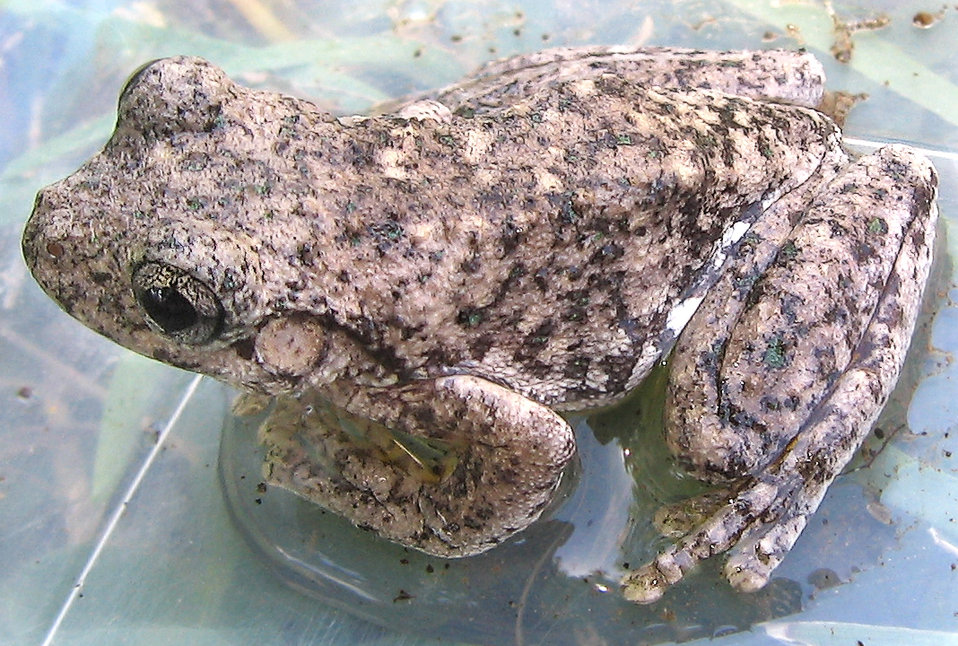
Peron's tree frog Taken, and uploaded by liquidGhoul 05:34, 3 December 2005 (UTC)
Category:Frog images